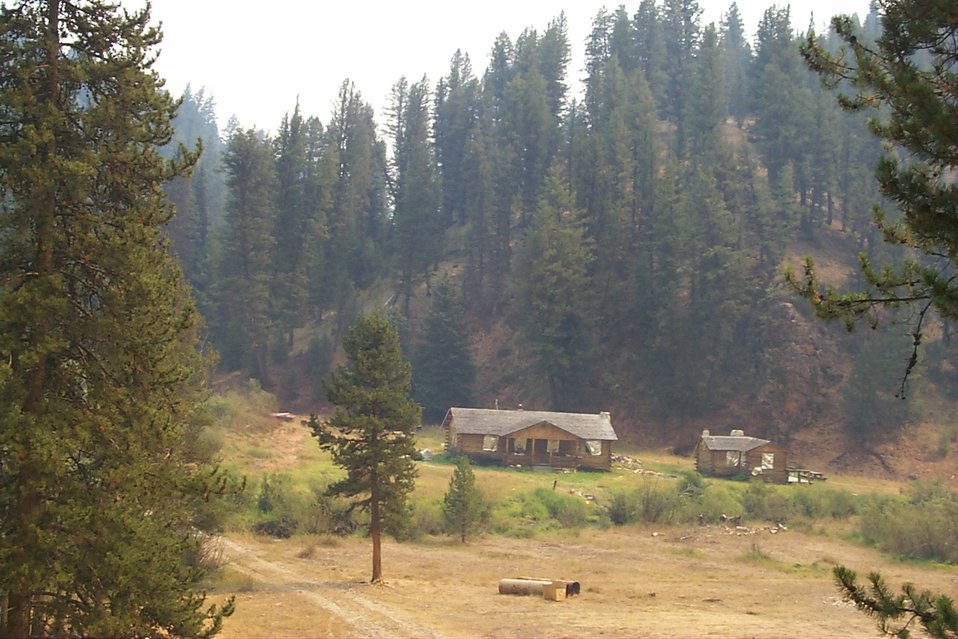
Fire retardant measures Urban interface Fire Clearwater Fire Salmon Field Office USRD Upper Snake River District